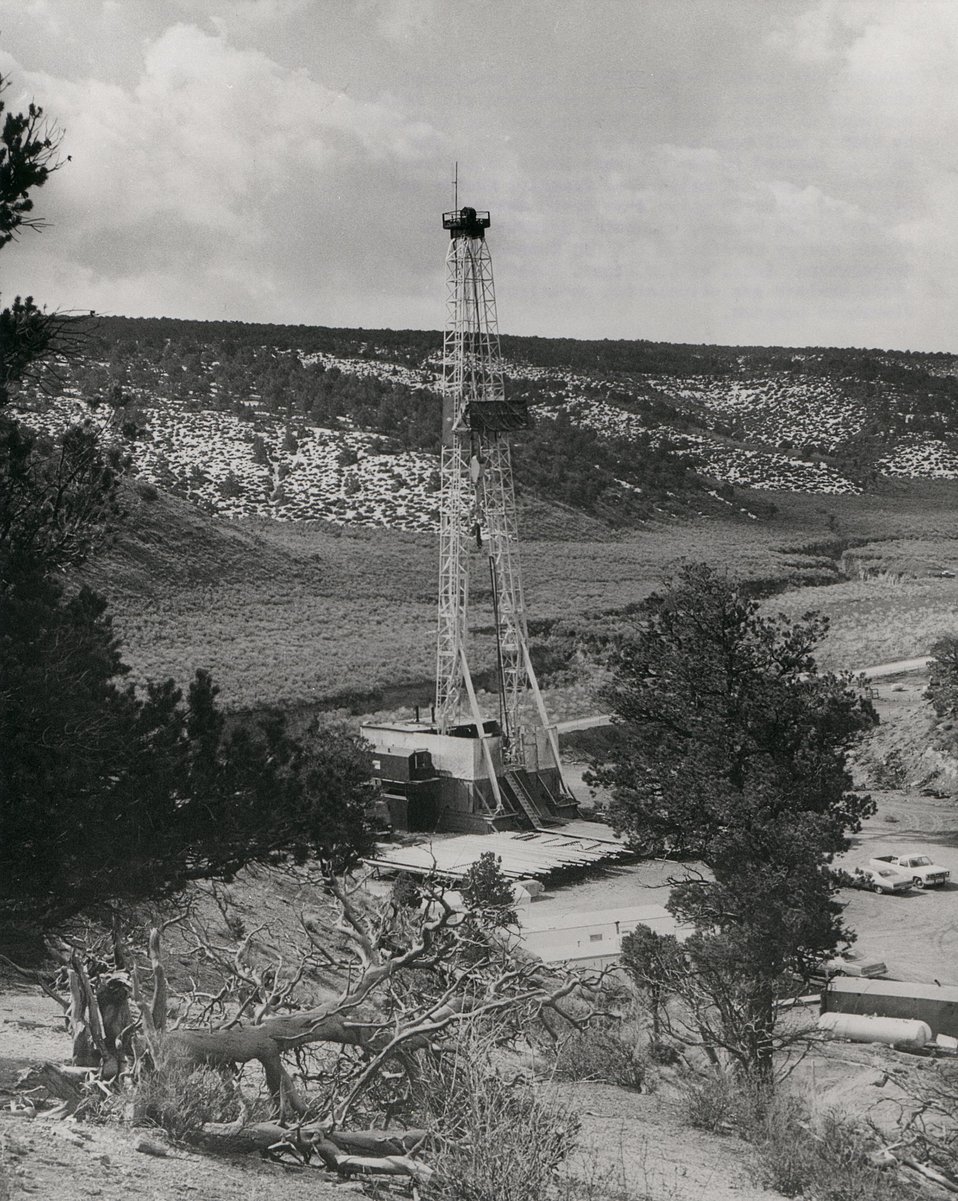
Shows the Project Rio Blanco emplacement rig, which was used to lower three 30-kilometer nuclear explosives down a well bore more than a mile deep. Circa 1973.